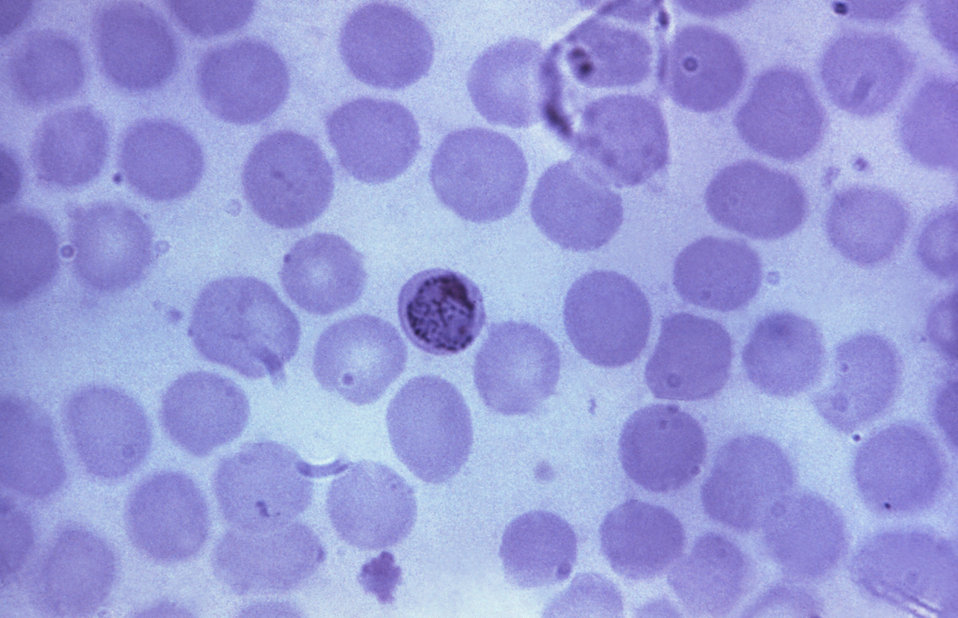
This thin film Giemsa stained micrograph depicts an older, growing Plasmodium malariae trophozoite.